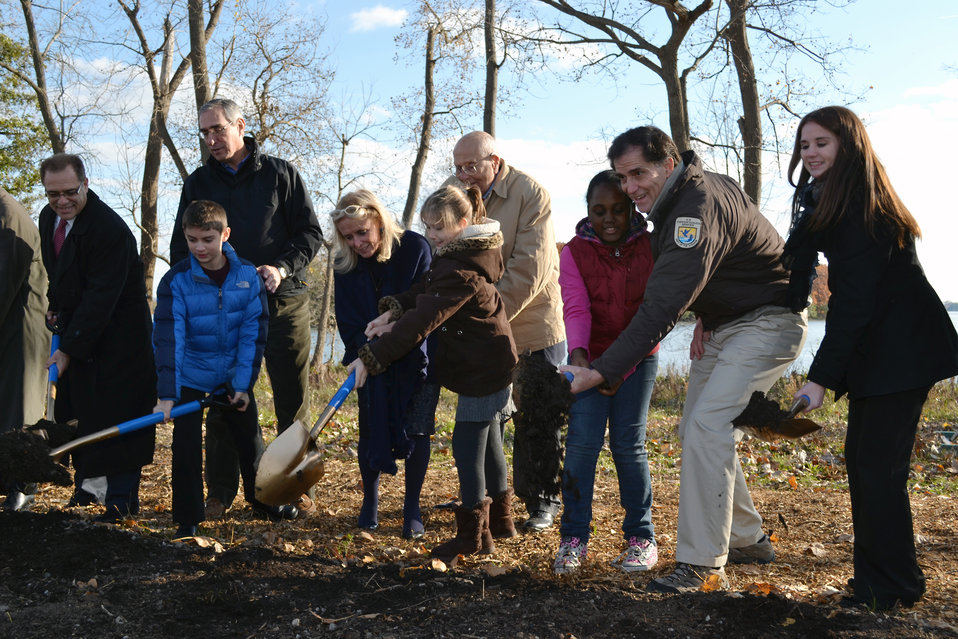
Gateway Visitor Center Groundbreaking

Detroit River International Wildlife Refuge groundbreaking celebration.